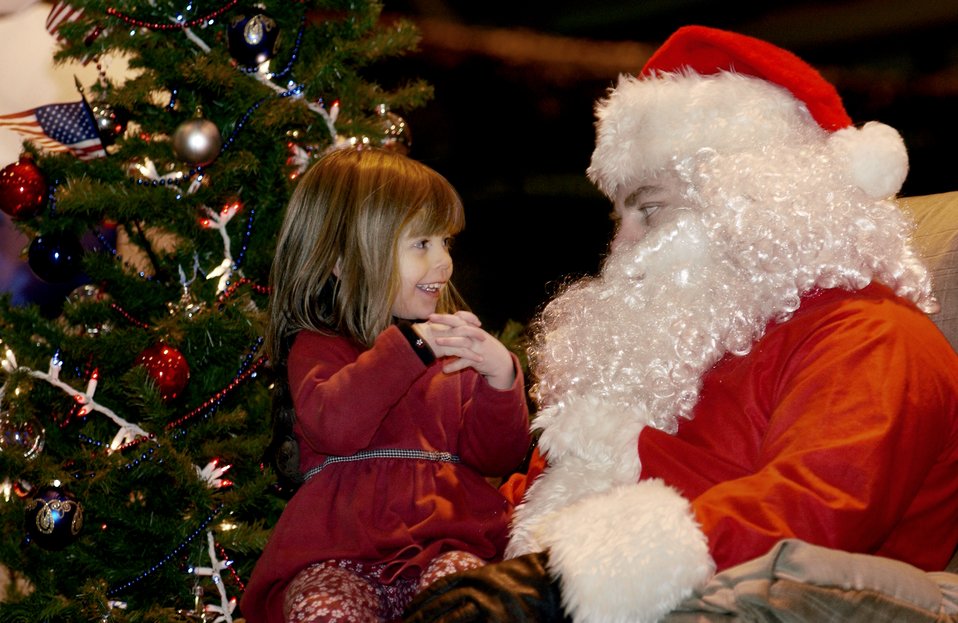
Have you been a good girl?

RAMSTEIN AIR BASE, Germany -- Allex Briggs sits on Santa's lap and tells him what she wants for Christmas. She is the daughter of Captain Matt Briggs of the 37th Airlift Squadron here.